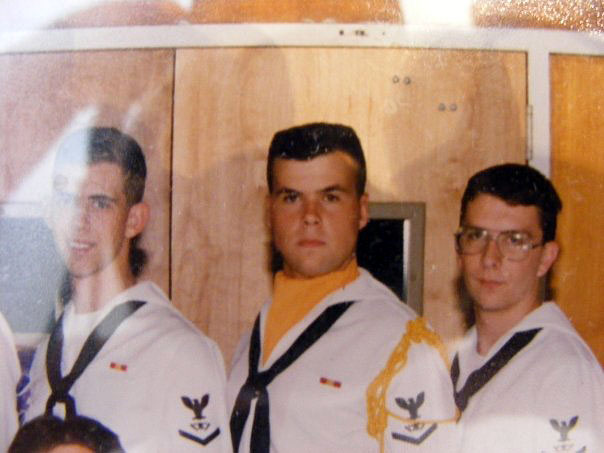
James Conright -- Pacific Region

James Conright, an Administrative Assistant in the Pacific Region served in the Navy from 1991 to 1997. He’s one in the middle with the ascot and rope. In this picture, he was a Fire Controlman, Third Class.